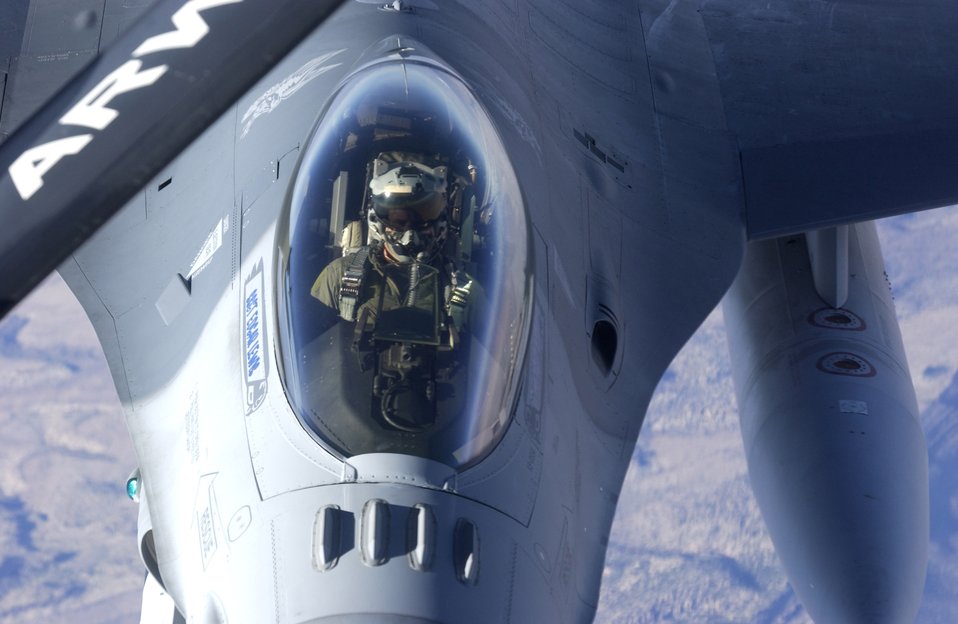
Red Flag kicks off at Nellis

An F-16 Fighting Falcon approaches the boom on a KC-135 Stratotanker to refuel Oct. 11 during Red Flag 07-1 being held at Nellis Air Force Base, Nev. Red Flag runs from Oct. 10 to 20 and tests aircrews' warfighting skills in realistic combat situations. The aircraft will be flying missions during the day and night at the nearby Nevada Test and Training Range where they will simulate an air war. U.S. servicemembers, with representatives from each branch of service along with coalition forces, are participating in Red Flag.